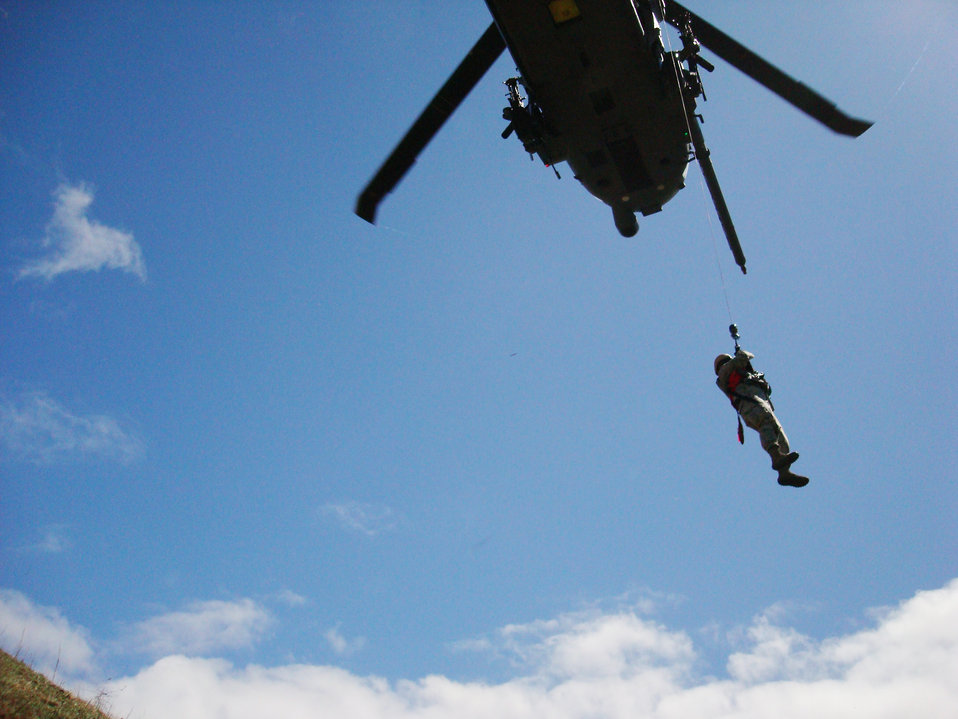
Exercise key to Hawaiian air support center upgrade

Maj. Thomas Ikehara is hosted up a helicopter during a simulated downed pilot scenario as part of exercise Balikatan 2010 March 20, 2010, in the Philippines. Balikatan is an annual bilateral exercise designed to increase interoperability between the U.S. and Philippine air forces, and exercises the two nation's ability to operate together when responding to natural disasters. Major Ikehara is from the Hawaii Air Support Operations Center deployed to the Philippines from Joint Base Pearl Harbor-Hickam, Hawaii.